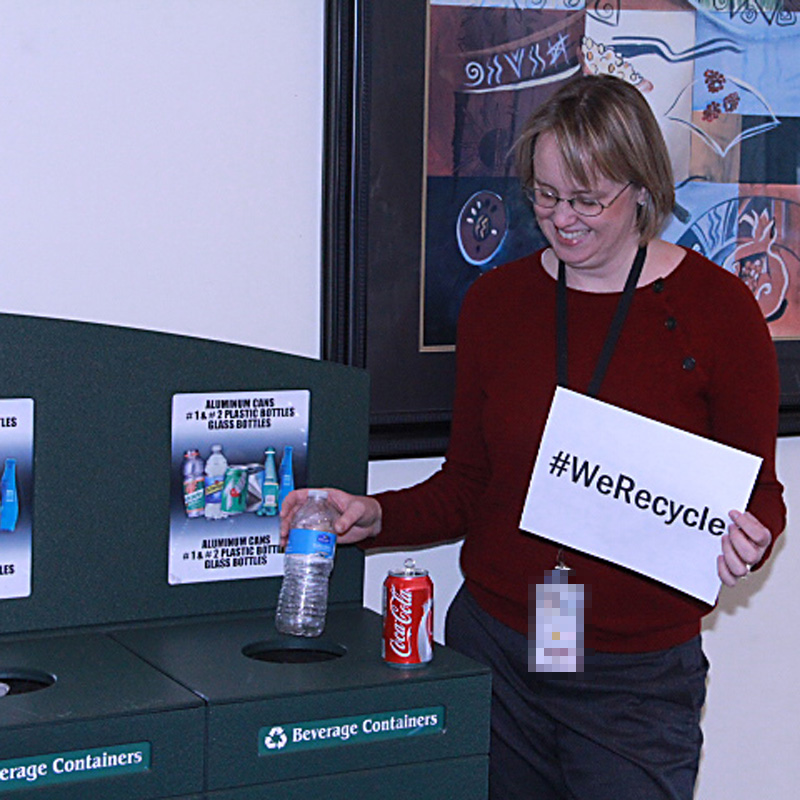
EPA Employee Mary Recycles

At EPA, #WeRecycle. Learn how you can too: www2.epa.gov/recycle